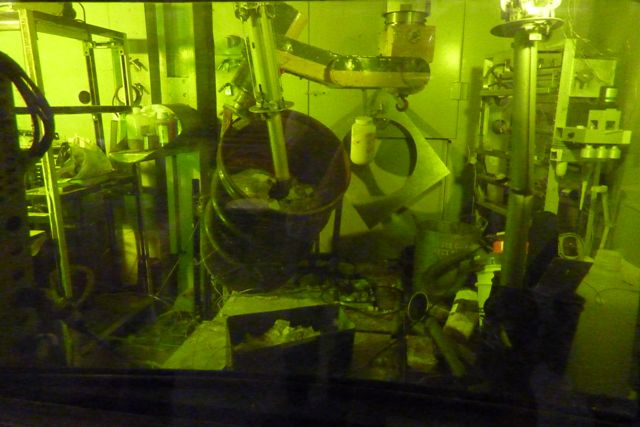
Recovery Act Helps Office of Science Laboratory Achieve Significant Milestone

Debris is removed for packaging in Building 205, K-Wing, at Argonne National Laboratory.

With the support of the Recovery Act, the DOE Office of Science’s Argonne National Laboratory (ANL) has reached a significant milestone in reducing its nuclear footprint now that it has reclassified a key building based on the amount of radiological material it holds.